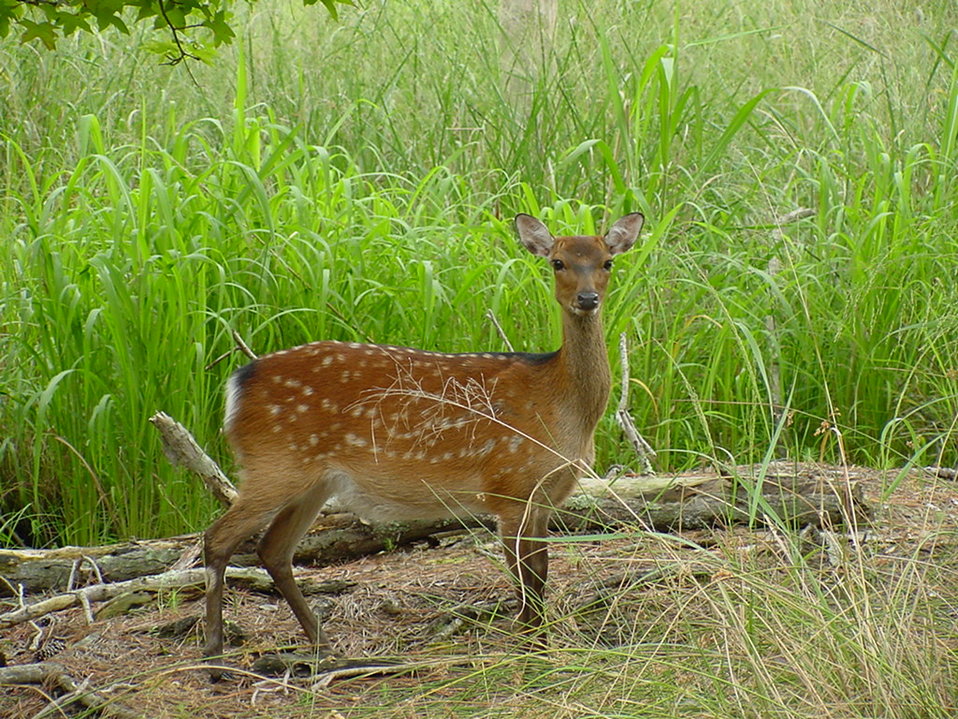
Deer

White-tailed deer at Blackwater National Wildlife Refuge.